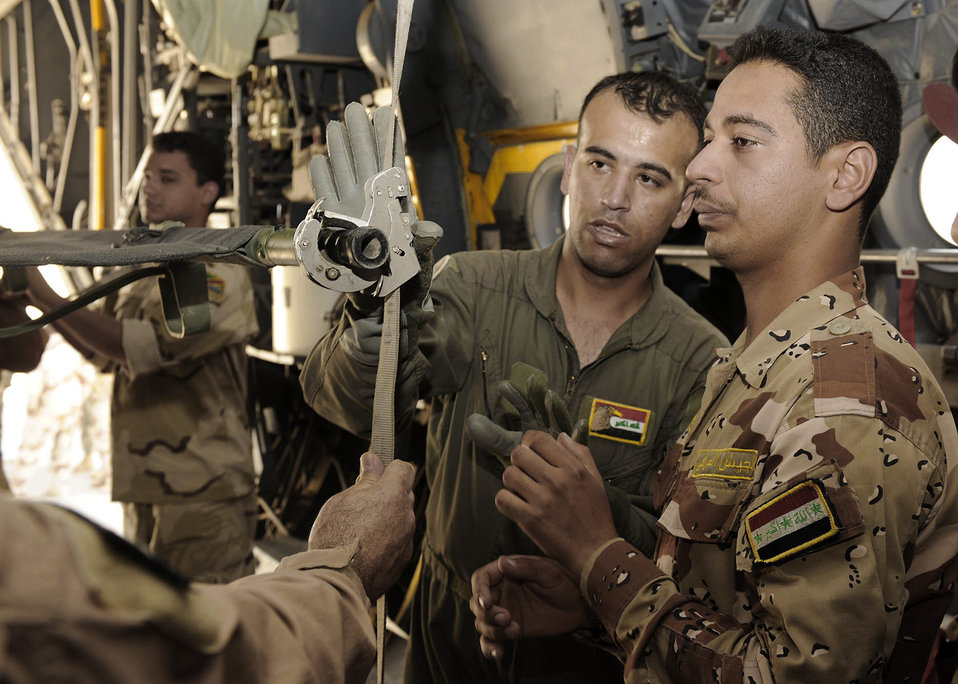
Air Force flight surgeons hand over training mission to Iraqis

Iraqi air force Lt. Tahssen explains the procedures to reconfigure a C-130 for aeromedical evacuation transport to Iraqi flight medic students June 2 at New Al-Muthana Air Base, Iraq. The four-week course, once taught by U.S. instructors, is now instructed by Iraqis. Lieutenant Tahssen is a nurse and flight medic instructor.